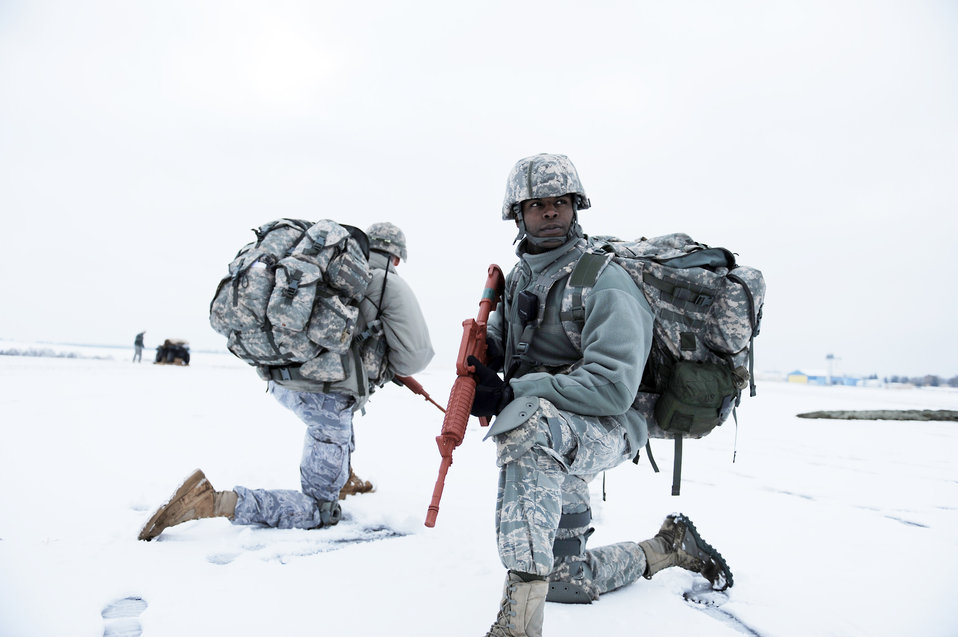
Ramstein forces practice air insertion

Capt. Mark Breed and Master Sgt. Tyrone Morgan secure a drop-zone during an insertion mission at Bitburg Airport, Germany, Jan. 25, 2010. The unit is setting up bare-base operations as part of the dual-wing operational readiness exercise with the 86th Airlift Wing. Captain Breed is the operations officer for the 435th Air Ground Operations Wing and Sergeant Morgan is the 435th AGOW operations superintendent at Ramstein Air Base, Germany.